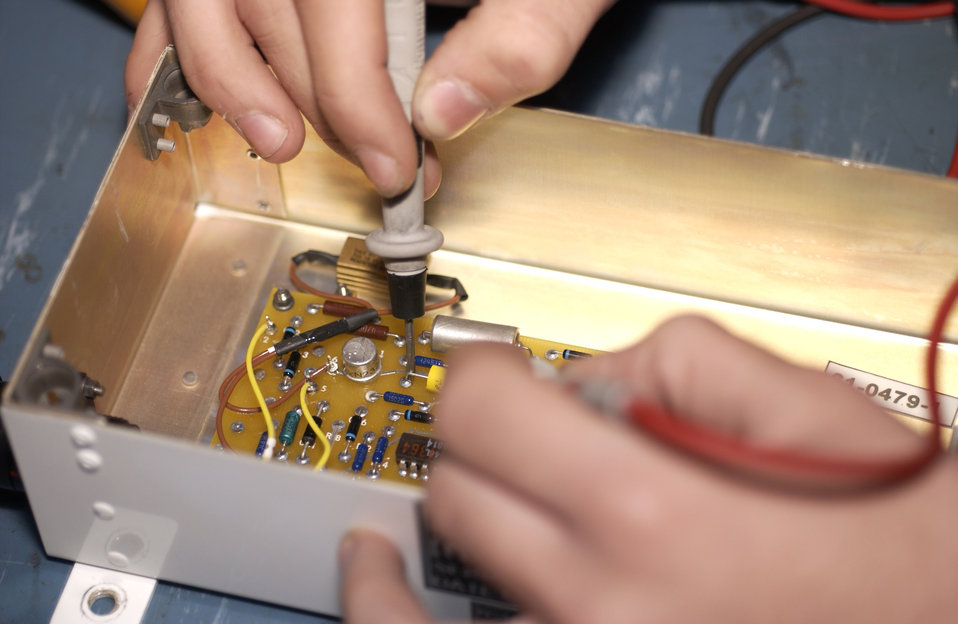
Battery check

KADENA AIR BASE, Japan -- Airman 1st Class Michael Davis checks the electrical components of a battery from an E-3 Sentry here. Airman Davis is assigned to the 18th Component Maintenance Squadron.